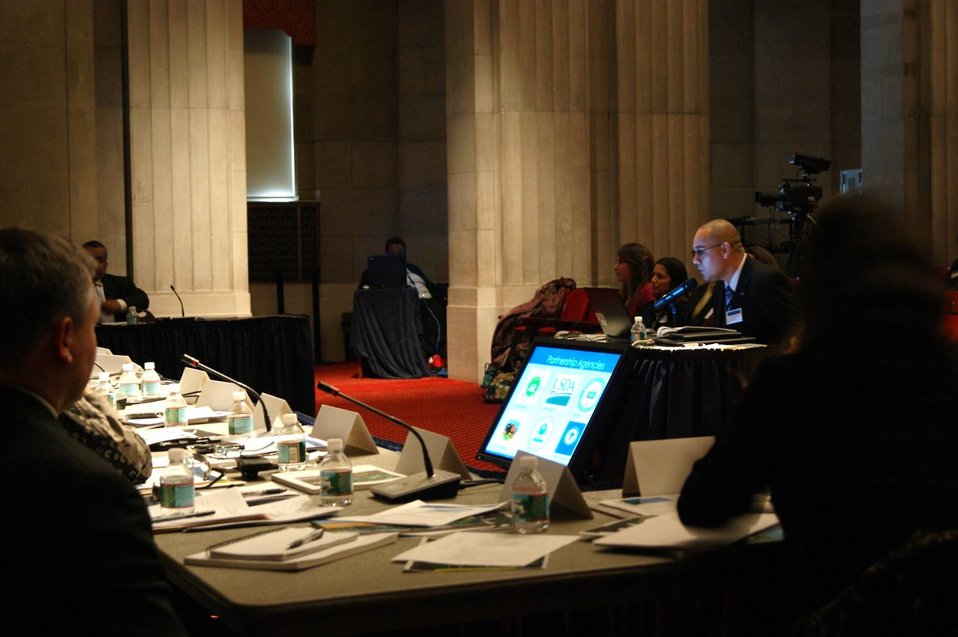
Coral Reef Task Force - Winter Meeting 2012